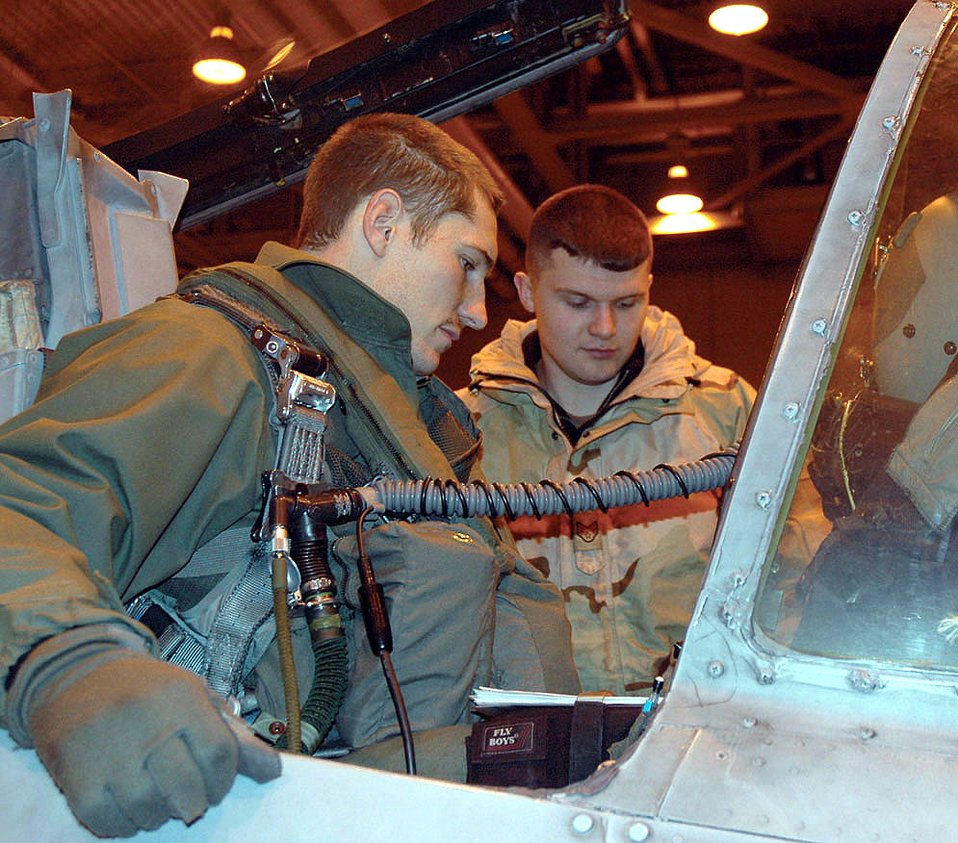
A-10s deploy

EIELSON AIR FORCE BASE, Alaska (AFPN) -- Capt. Dustin Ireland completes pre-flight checks with Staff Sgt. Stephen Bailey prior to their deployment. Captain Ireland is a pilot with the 355th Fighter Squadron and Sergeant Bailey is a crew chief with the 354th Aircraft Maintenance Squadron.